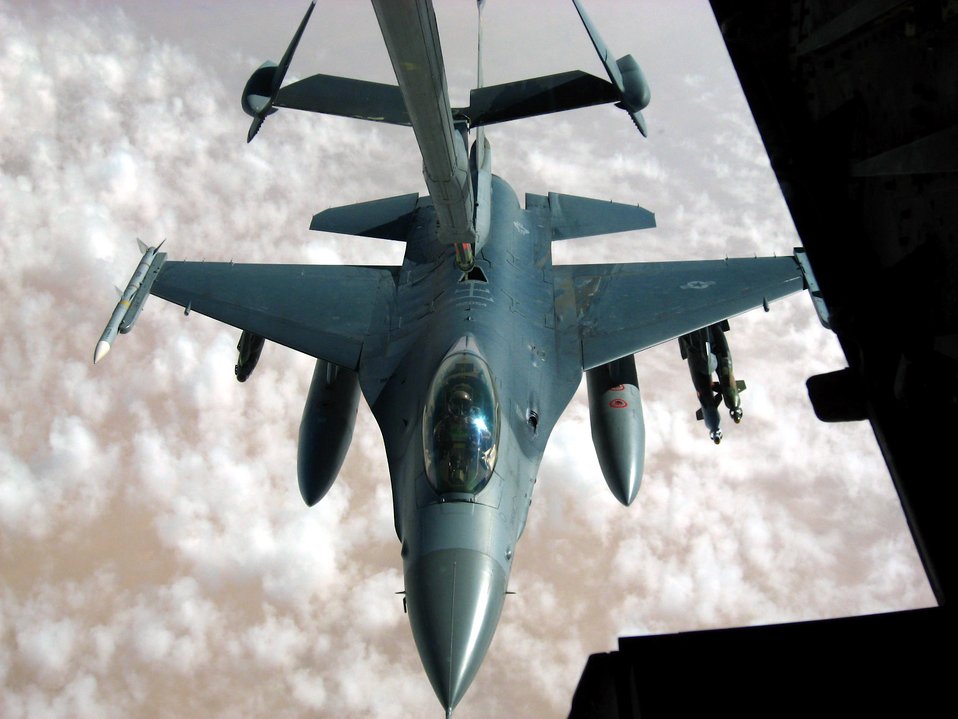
Refuel for the fight

An F-16 Fighting Falcon from the New York Air National Guard takes fuel from a KC-10 Extender from the 380th Air Expeditionary Wing over Iraq Nov. 4. The 380th AEW is the largest air refueling unit in Southwest Asia, using KC-10s and KC-135 Stratotankers to fuel U.S. and allied aircraft.